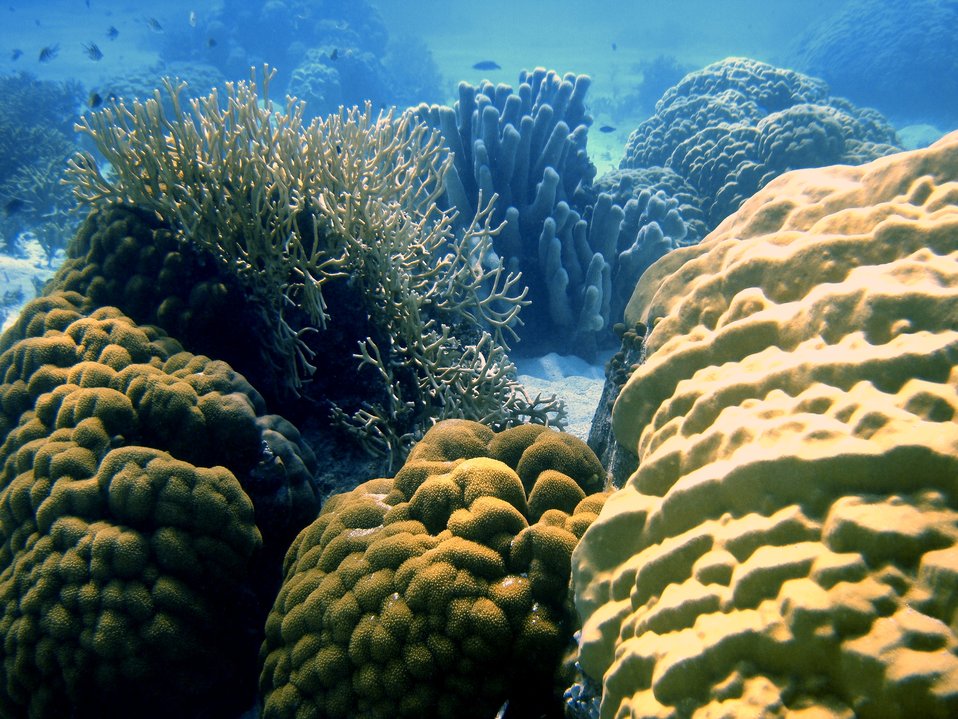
Poritidae coral Porites sp. to right